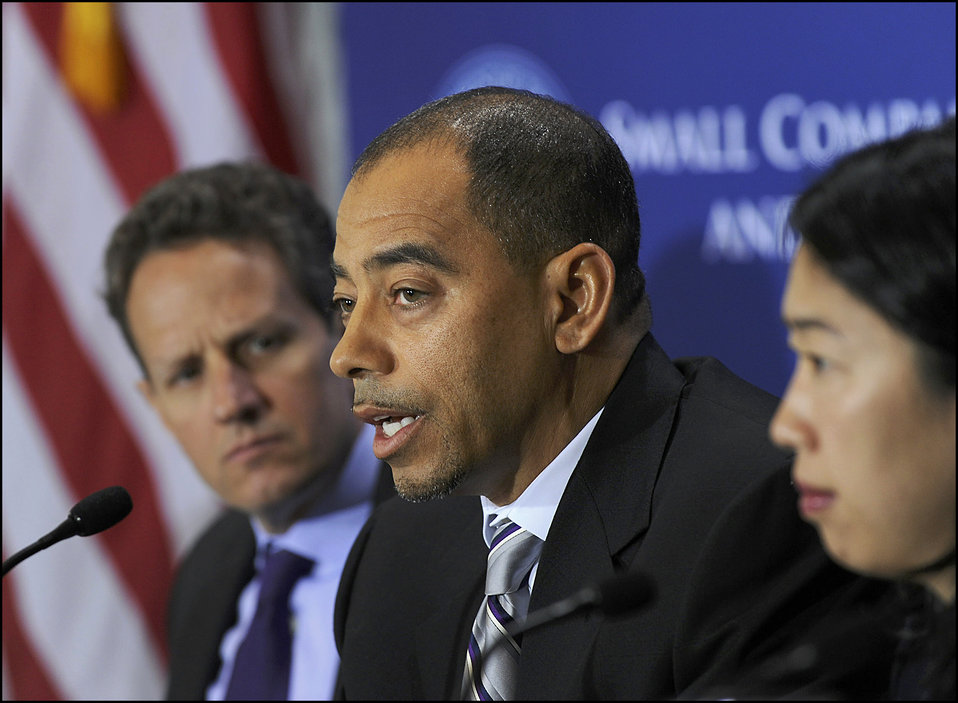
Access to Capital Conference

Duane McKnight, Senior Partner of SYNCOM, offers his perspective during the first panel on 'Pre-IPO Funding: Seed Capital, Angel Investors, Venture Capital, and Growth Equity.'